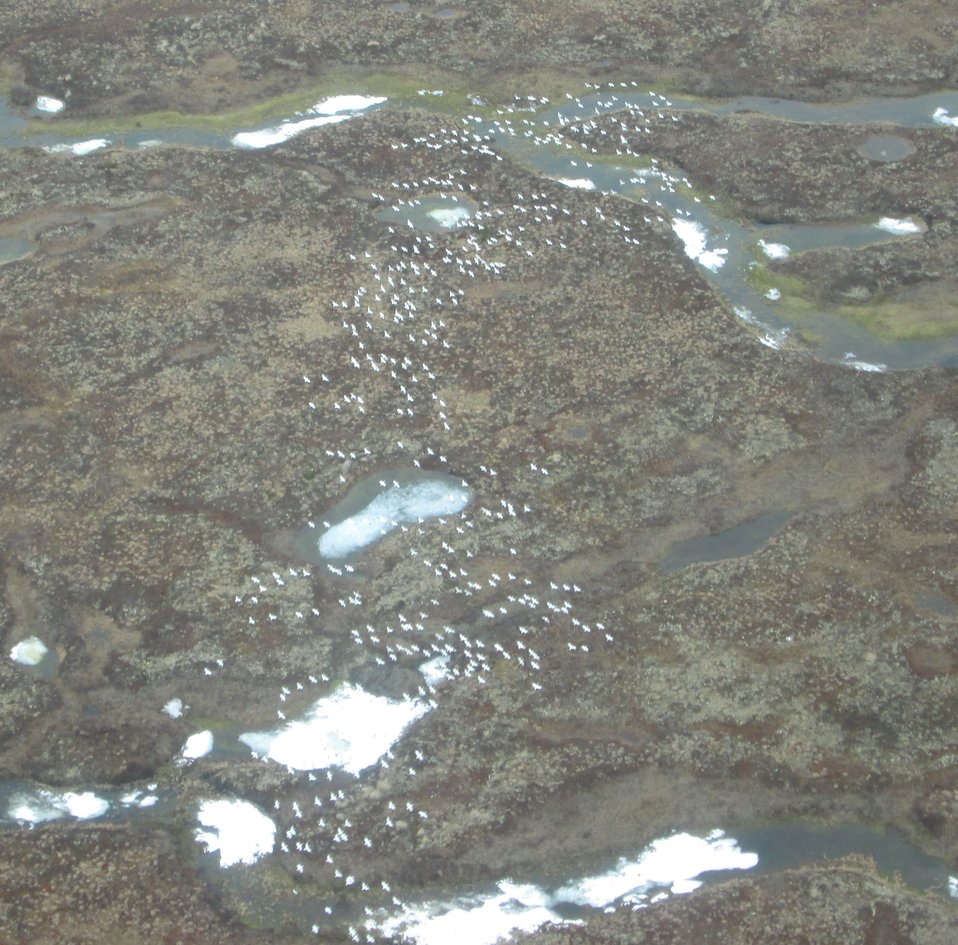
Snow Goose Telemetry

Many of the breeding Wrangel Island (located in northern Russia) snow geese winter in Washington State. During their fall/spring migrations they have been known to stop on Yukon-Kuskokwim Delta (YKD). In the winter 2013 the Washington Department of Fish & Wildlife attached transmitters to a handful of the wintering snow geese to monitor movements, stop over sites, etc. It is known that the birds use the YKD as a stop-over site but exact locations of use and size of the the flocks were unknown. In May of 2013 we flew a survey to document number of snow geese on the Yukon-Kuskokwim Delta and where they were found.
USFWS Yukon Delta NWR